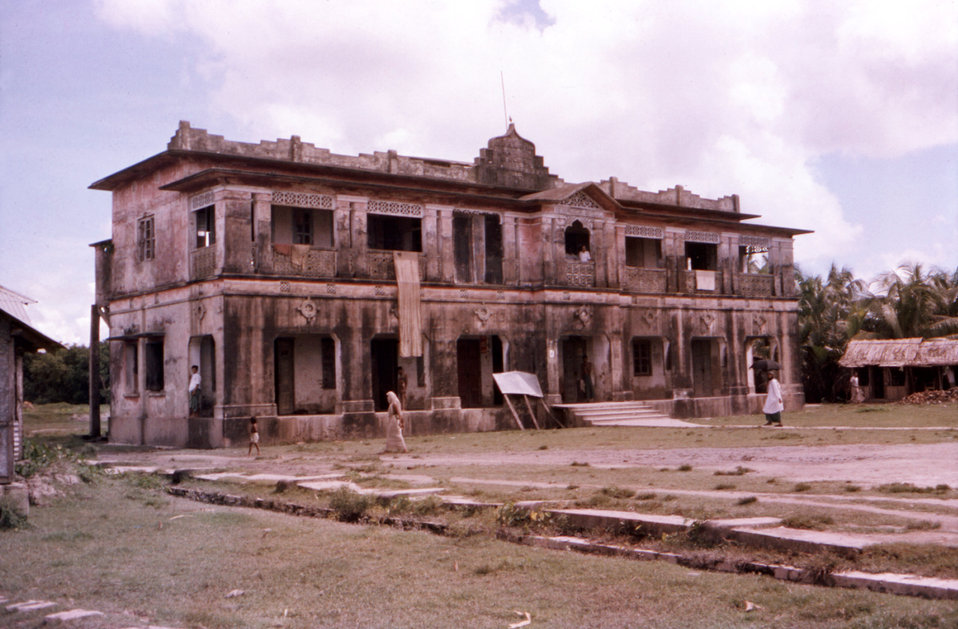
This October, 1975 photograph depicted a view of a former Patuakhali District hospital, in the country of Bangladesh, which had been devistated by the deadly 1970 cyclone.